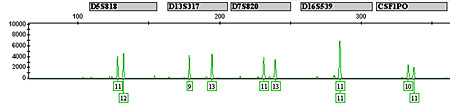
Cellular fingerprint: This electropherogram demonstrates the STR (short tandom repeat) technique NIST will use to identify human cell lines. The chart shows (in grey) specific locations, or loci, on the DNA chain of a human chomosome that are known to harbor short repeating sequences of DNA bases of varying lengths. The peaks count the actual number of such repeats at each locus. If the STRs at a sufficient number of loci are counted this wayNIST uses eight locithe chances of a random match are approximately 100 million to one.